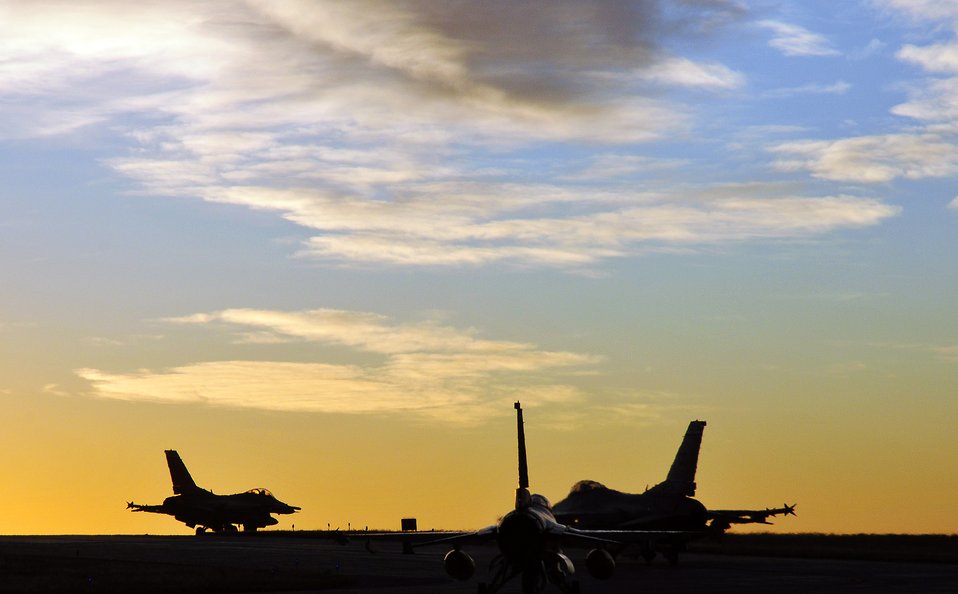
Breaking dawn

Three F-16 Fighting Falcons taxi for takeoff Oct. 15, 2011, at Buckley Air Force Base Colo., during an operational readiness exercise. The ORE evaluated Airmen with mission readiness in preparation for real-world deployments.